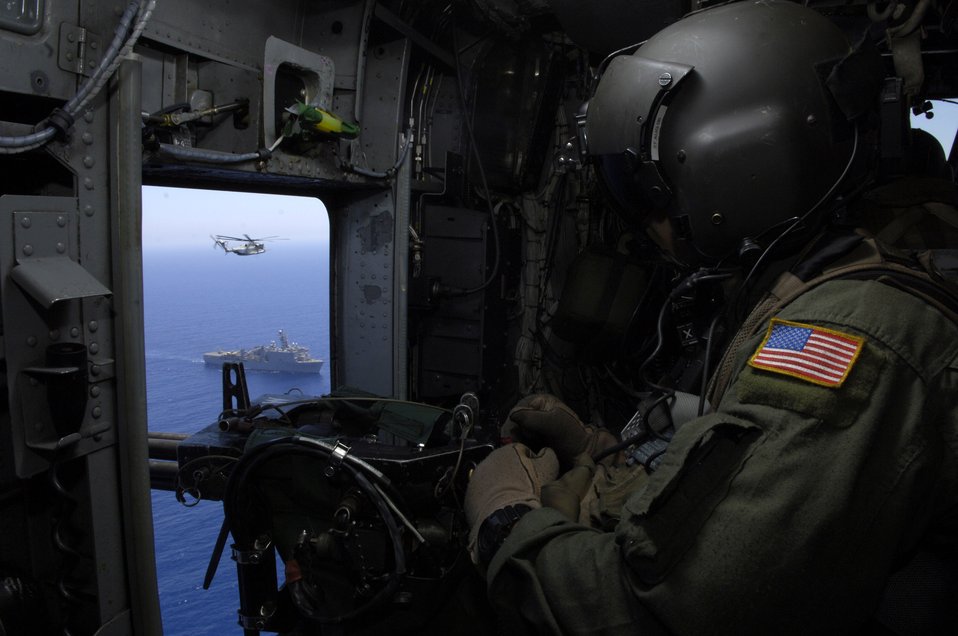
Airmen escort secretary of state to Lebanon

Tech. Sgt. John Stott looks out the left side of his MH-53M Pave Low helicopter as it escorts a Marine CH-53 Sea Stallion transporting Secretary of State Condoleezza Rice from Cyprus to the U.S. Embassy in Beirut, Lebanon, July 24. Sergeant Stott is part of the 352nd Special Operations Group, Royal Air Force Mildenhall, deployed to Cyprus to help transport Americans who are voluntarily departing Lebanon.